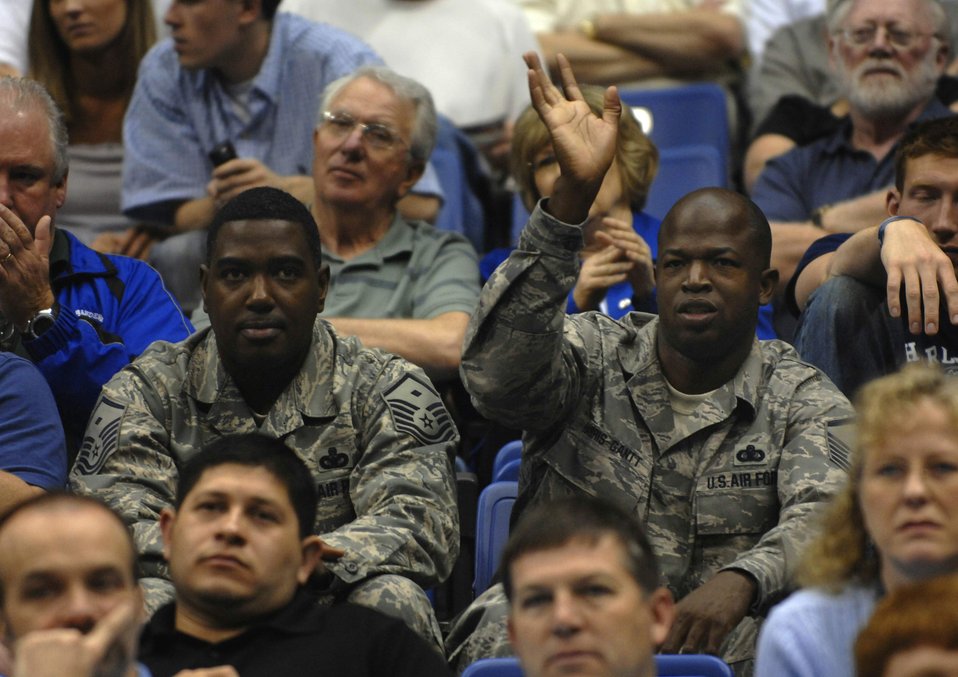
NCAA Final Four recognizes American servicemembers

Master Sgts. Rodney McLeod and Joseph Harris-Gantt watch the University of Memphis basketball team practice April 4 at the Alamodome in San Antonio. The men's NCAA Final Four weekend brought the best college basketball teams to San Antonio for the national championship, and during the weekend NCAA officials honored American military members. Sergeant McLeod is the first sergeant of the 68th Information Operations Squadron from Brooks City-Base, Texas, and Sergeant Harris-Gantt is the chief of information management with the 68th IOS.